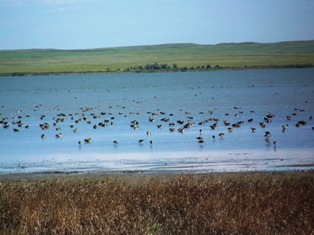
Waterfowl on Lake Bowdoin

Shorebirds and waterfowl using shallow areas of Lake Bowdoin in Bowdoin National Wildlife Refuge in Montana.